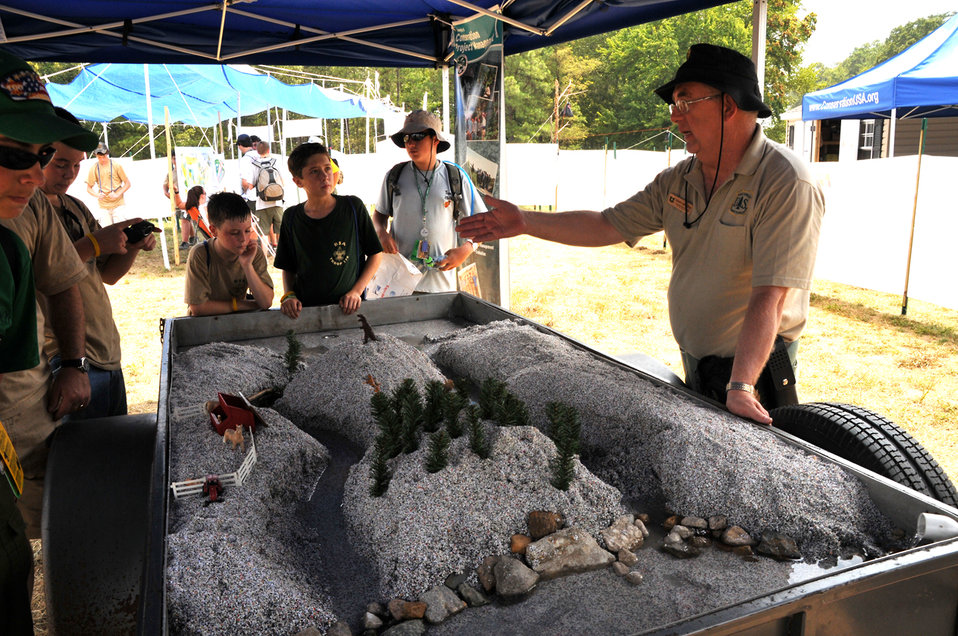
jamboree1

Denny Mattison, US Forest Service, tells scouts how water from sudden rains can damage ecosystems (USDA Forest Service photo by Jerry Snyder.